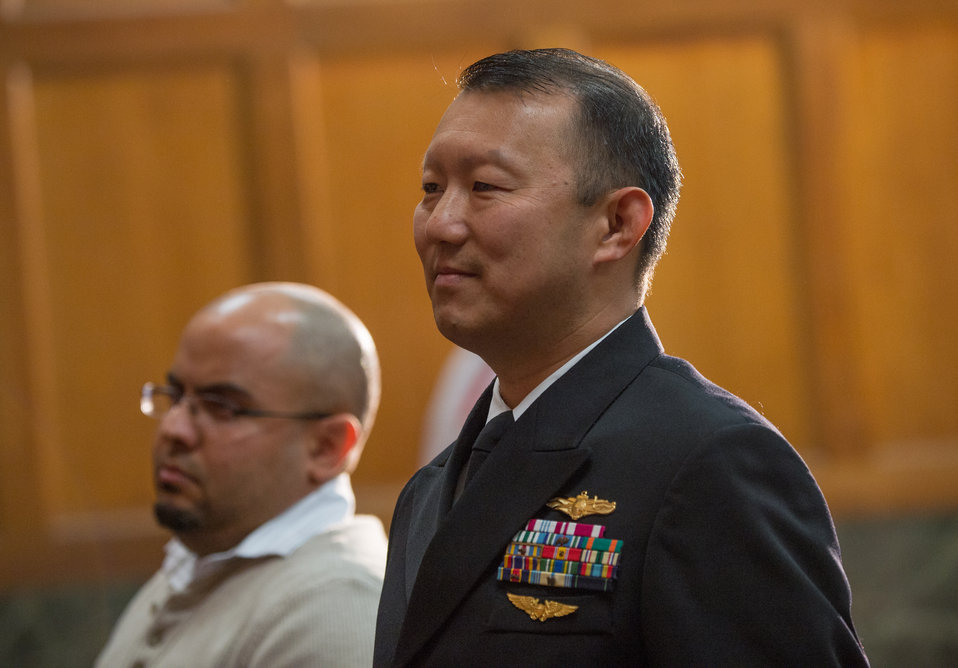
U.S. Department of Agriculture (USDA) Departmental Management (DM) American Indian and Alaska Native Diversity and Inclusion Program Manager and U.S. Navy Reserve Commander Frederick Cheng and other present veterans are called by their past or present Service to stand and be honored with the singing of each of the major Service songs sung by soprano Amy Keesun Kwon, during the 2013 USDA Veterans’ Day Observance, whose theme is “VALOR, COURAGE, SACRIFICE – HONORING ALL WHO SERVED,” in Washington, DC, on Wednesday, November 20, 2013.